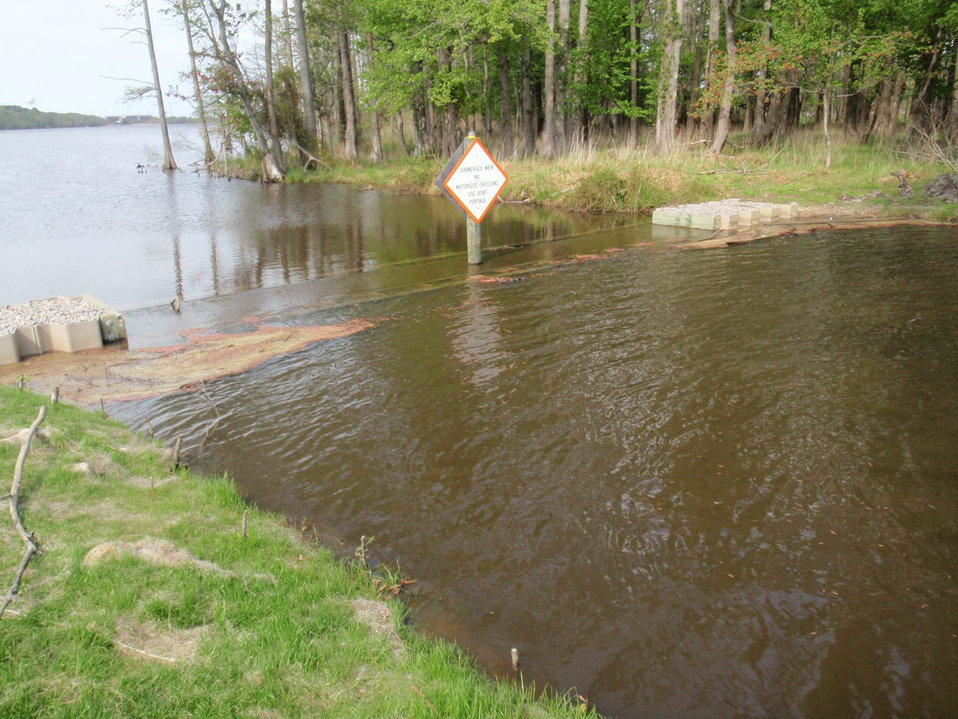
Weir installed at Lake Tecumseh

The weir that was installed at Lake Tecumseh to maintain water levels within the lake during signifcant wind events and reduce sedmentation to the Back Bay watershed.